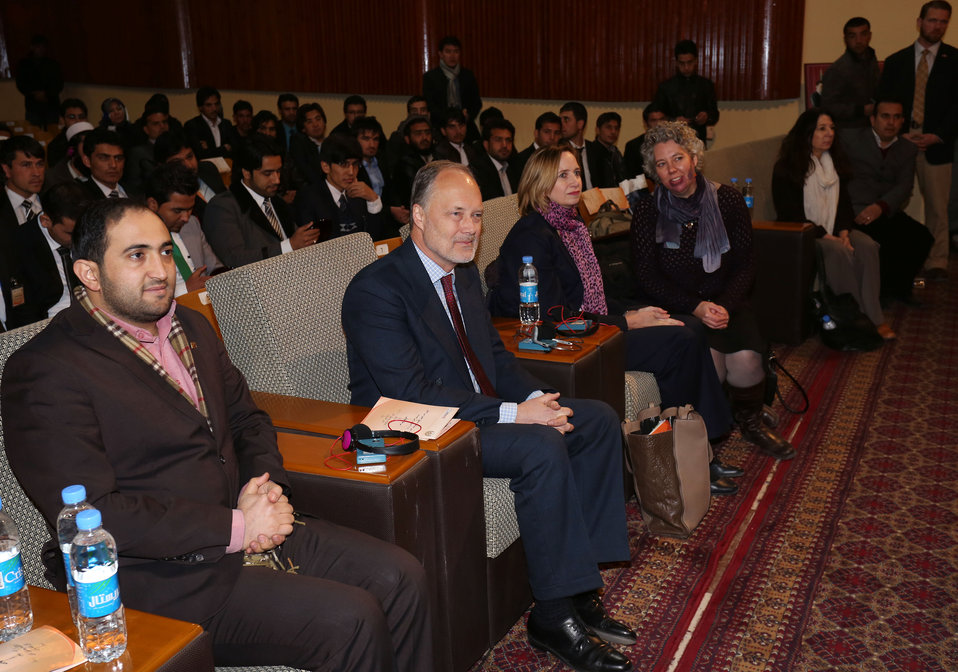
The U.S. Ambassador James Cunningham in International Law Moot Court Competition 2014